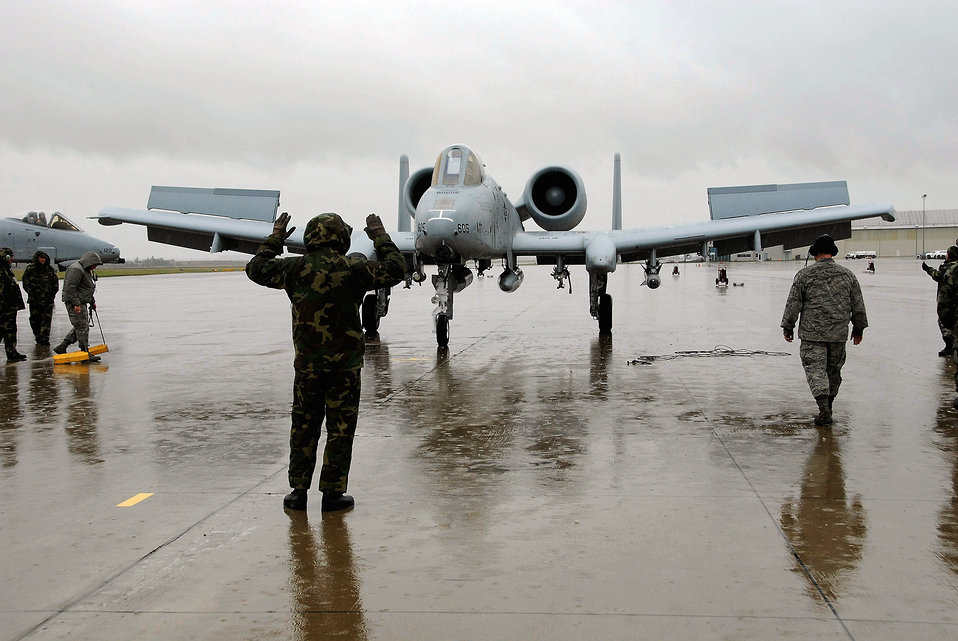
Hawgsmoke 2008 begins

A crew chief from the 442nd Fighter Wing marshals in the first A-10 Thunderbolt II to arrive at Salina Airport; Kan., for the Air Force's Hawgsmoke 2008; a biennial A-10 bombing and tactical gunnery competition. The event, hosted by Airmen from the 442nd FW's 303rd Fighter Squadron, tests A-10 pilots in flight leadership, target acquisition, weapons delivery. The 442nd FW is an Air Force Reserve Command unit based at Whiteman Air Force Base, Mo.